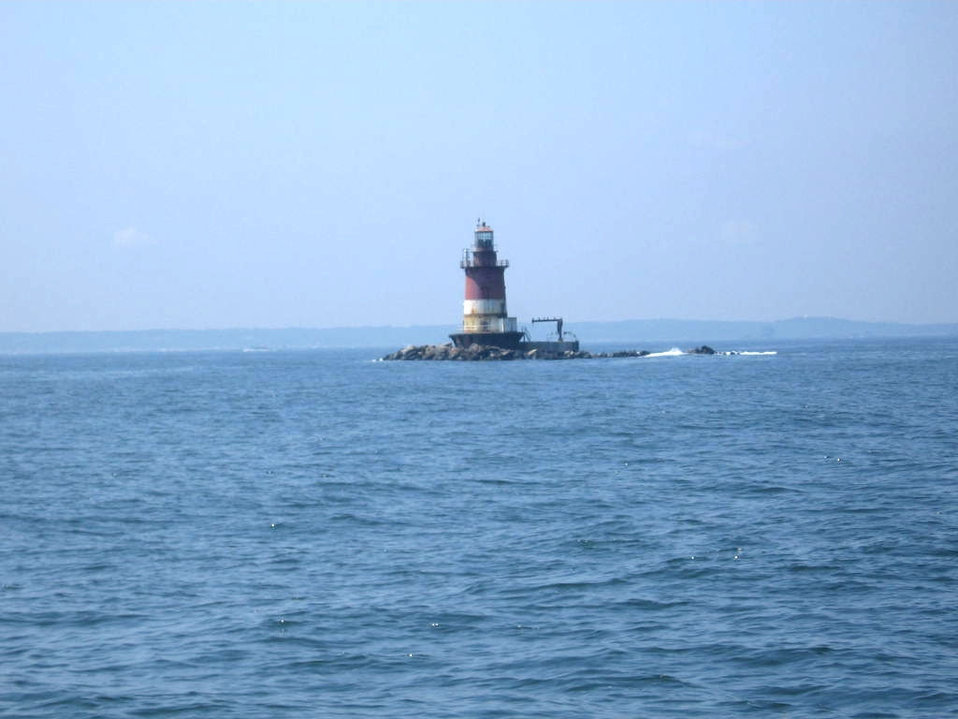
Romer Shoal Lighthouse, entering New York Harbor